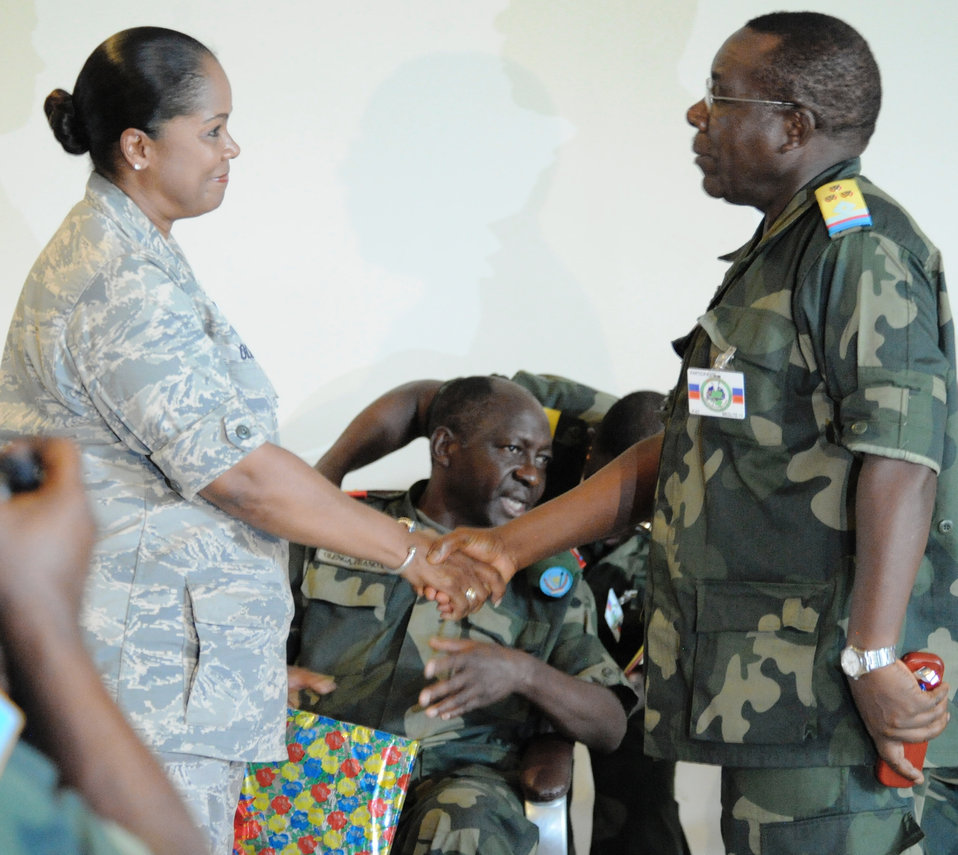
U.S., Congolese military complete MEDLITE 11

Lt. Col. June Oldman (left) and Congolese Col. (Dr.) Kabanda exchange tokens of gratitude May 5, 2011, as part of the MEDLITE 11's closing ceremony at Kinshasa, Democratic Republic of the Congo. More than 60 active duty, National Guard and Reserve Airmen worked together to teach aeromedical-evacuation techniques to more than 150 Congolese service members from April 25 to May 5. Colonel Oldman was the the director for MEDLITE 11, and Colonel Kabanda was Colonel Oldman's counterpart.